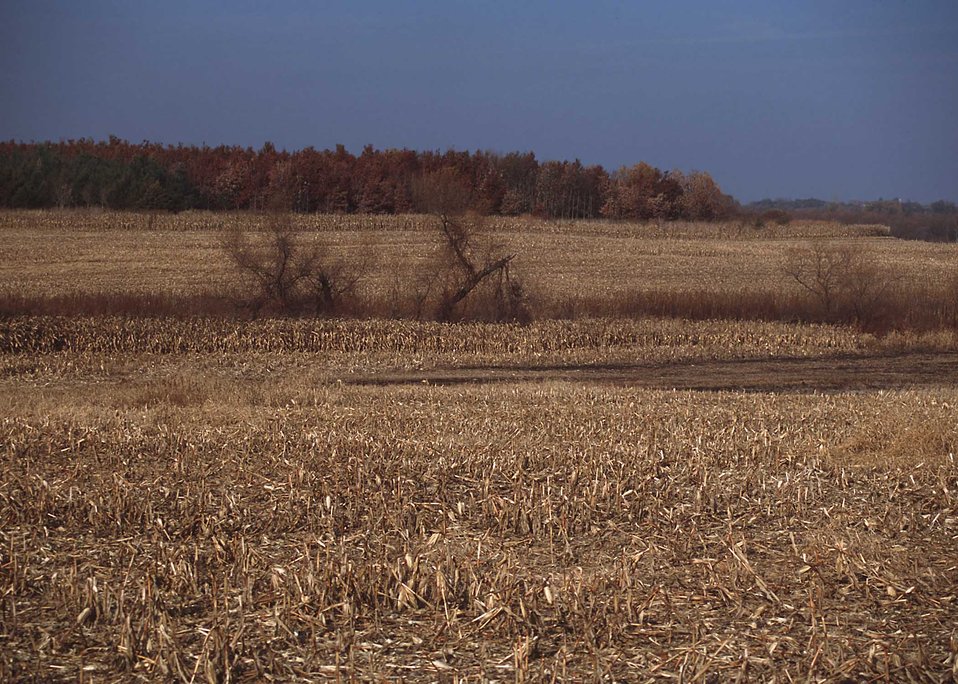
Leaving a few rows of unharvested corn or other grain near good wildlife cover adds to habitat for a number of species of wildlife.